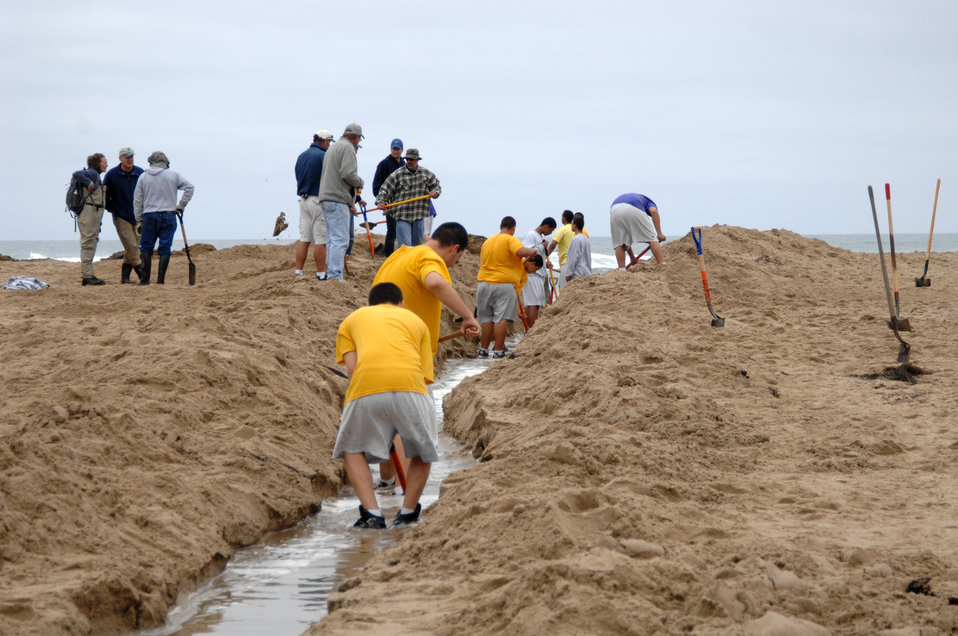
Pescadero Breach 15